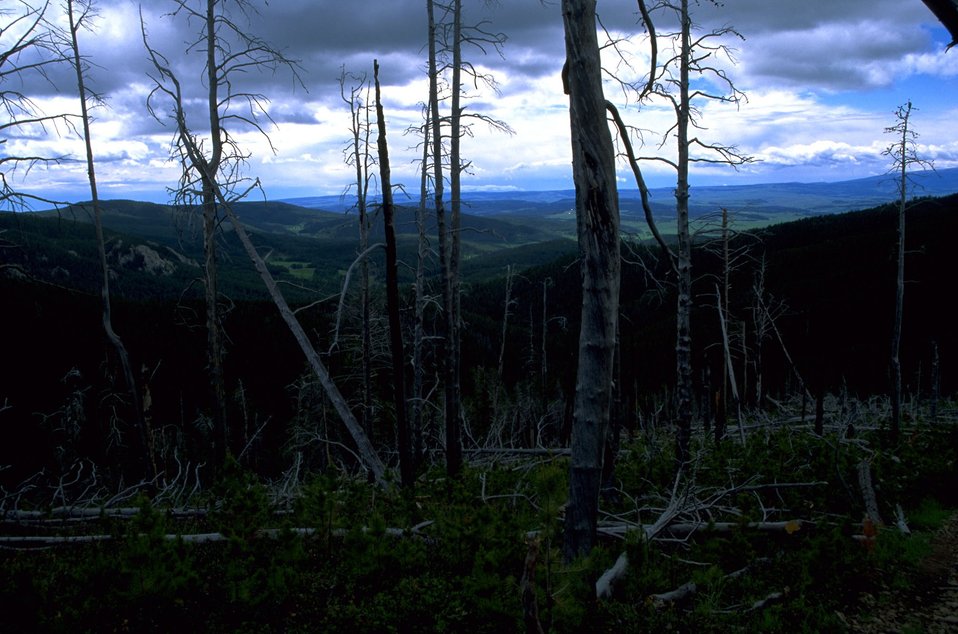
Dead trees in the Judith Mountains